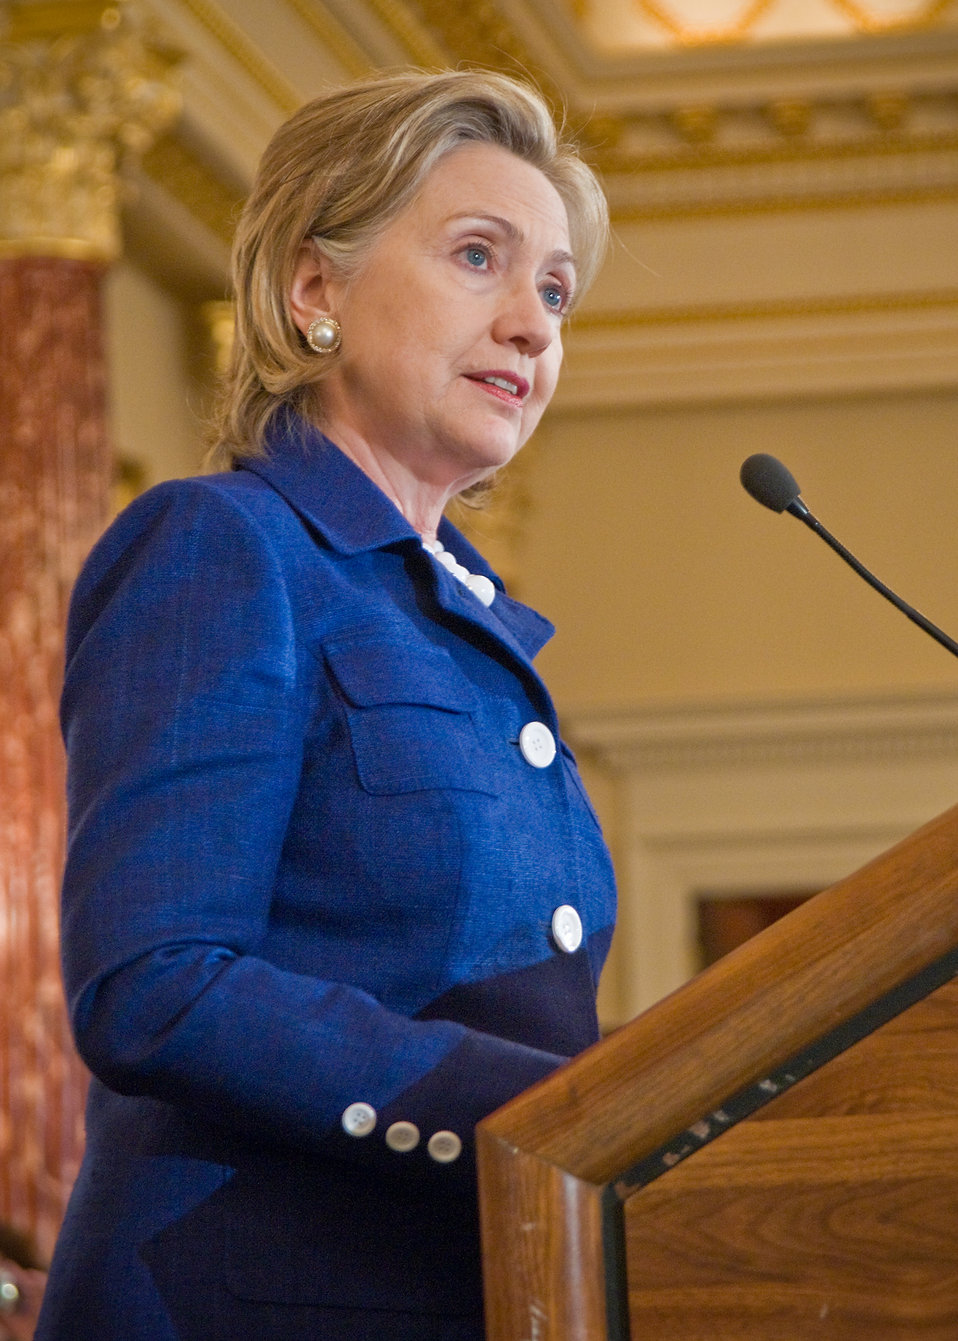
Secretary of State Hillary Clinton spoke of the challenges in global agriculture, trade and grassroots partnerships toward food security at a ceremony honoring the 2010 World Food Prize Laureates Reverend David Beckmann, President of Bread for the World and Jo Luck, Heifer International in the Benjamin Franklin Room at the U.S. State Department in Washington, DC, on Wednesday, June 16, 2010. The World Food Prize founded in 1986 by Dr. Norman E. Borlaug, recipient of the 1970 Nobel Peace Prize honors outstanding individuals who have made vital contributions to improving the quality, quantity and availability of food throughout the world. USDA Photo 10di1403-023.